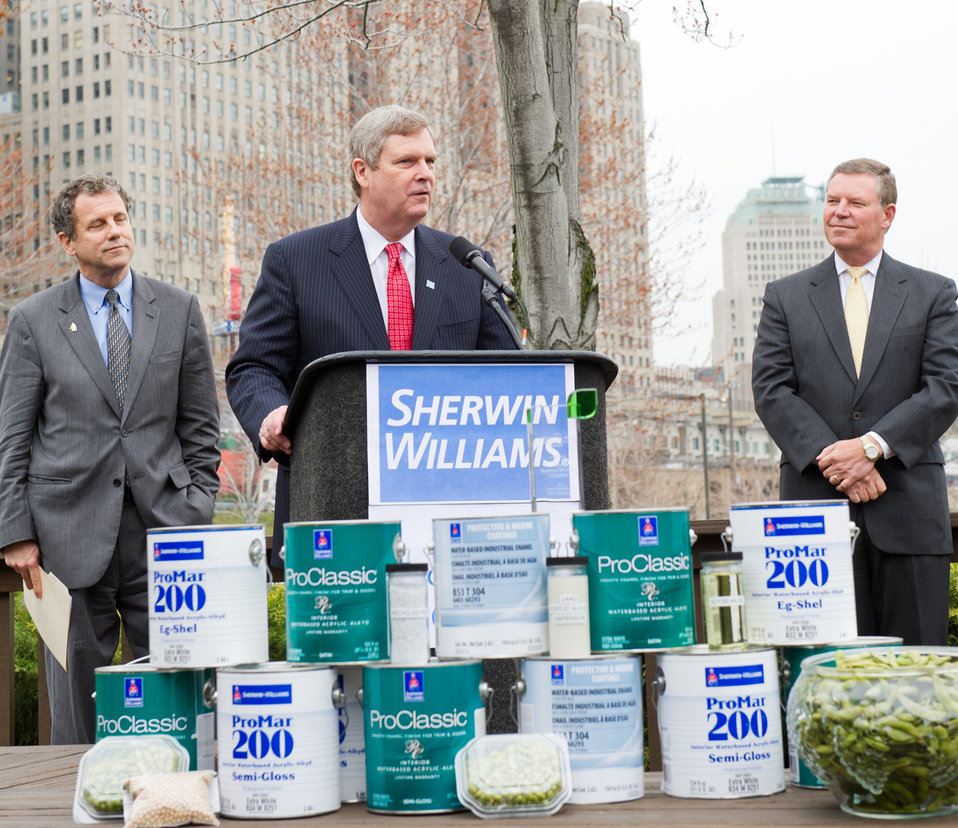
Agriculture Secretary Tom Vilsack makes remarks at the Sherwin-Williams John G. Breen Technology research facility in Cleveland, Ohio on March 16, 2012 on a visit to Ohio and Michigan.